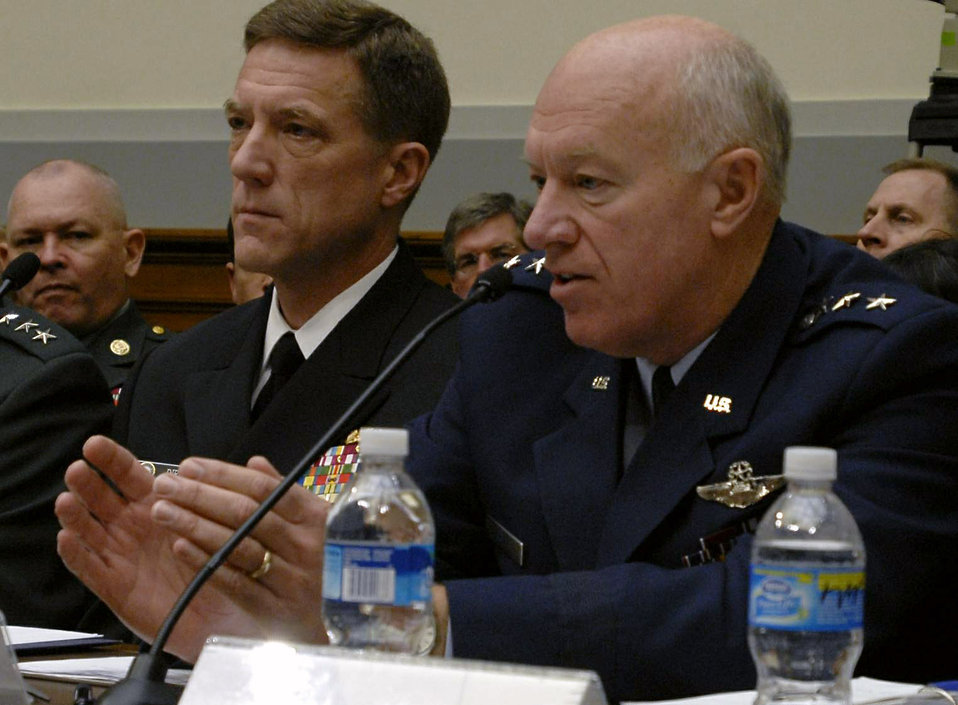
Air Force on target with recruiting, retention

Lt. Gen. Harry M. Wyatt III, director of the Air National Guard, testifies before the House Armed Services Committee Personnel Subcommittee March 2. The general was one of several senior military officials on Capitol Hill to answer questions about recruiting, retention and end strength for the active duty, Reserves and Air National Guard.